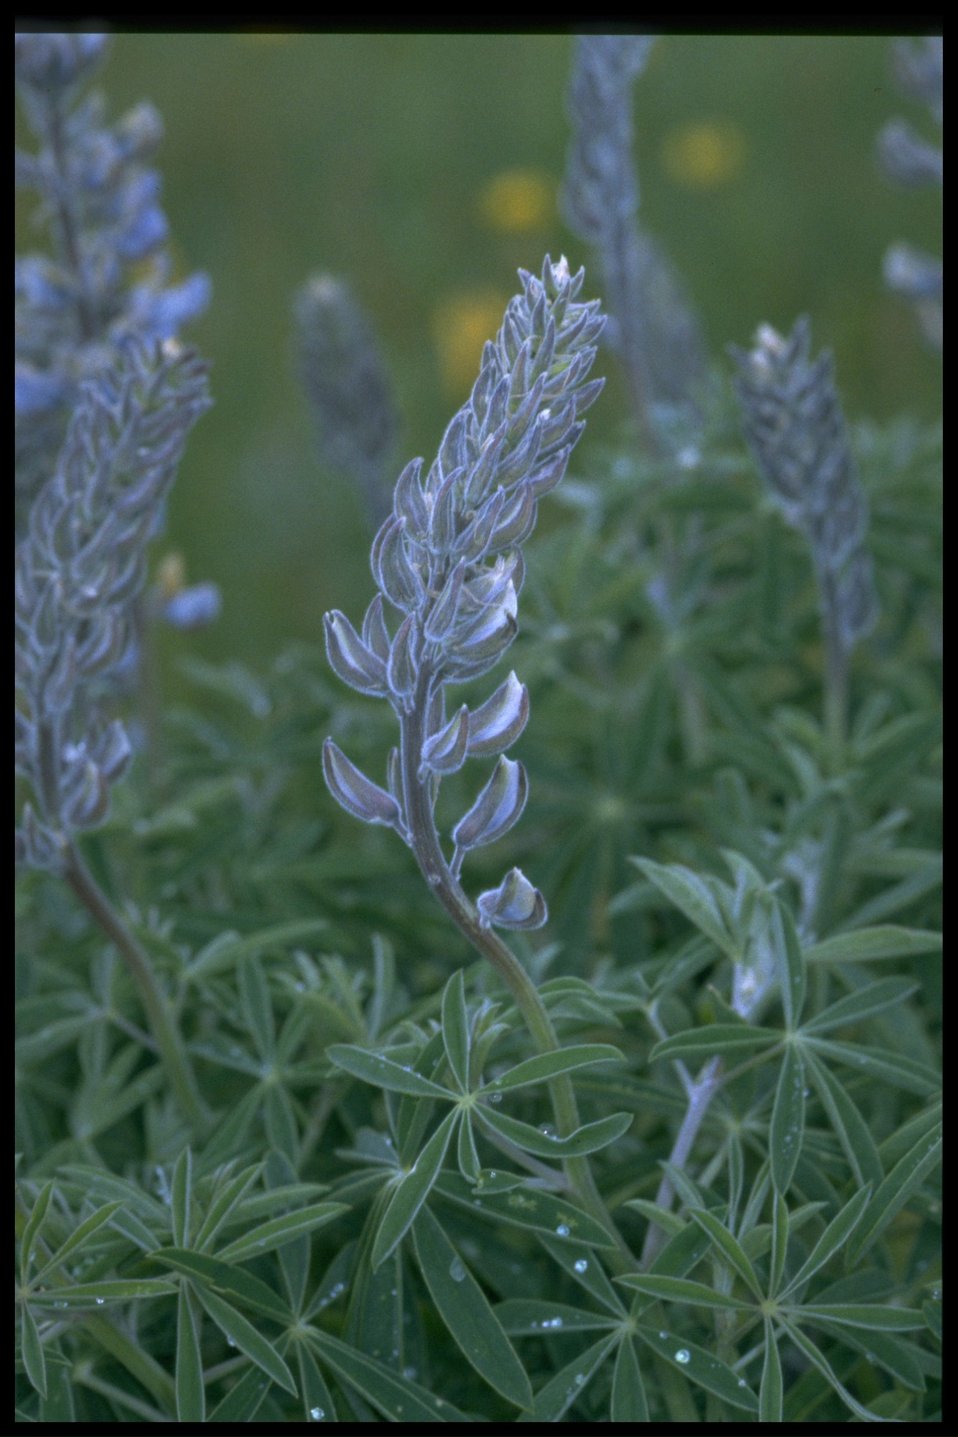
Medium shot of lupine (genus Lupinus).